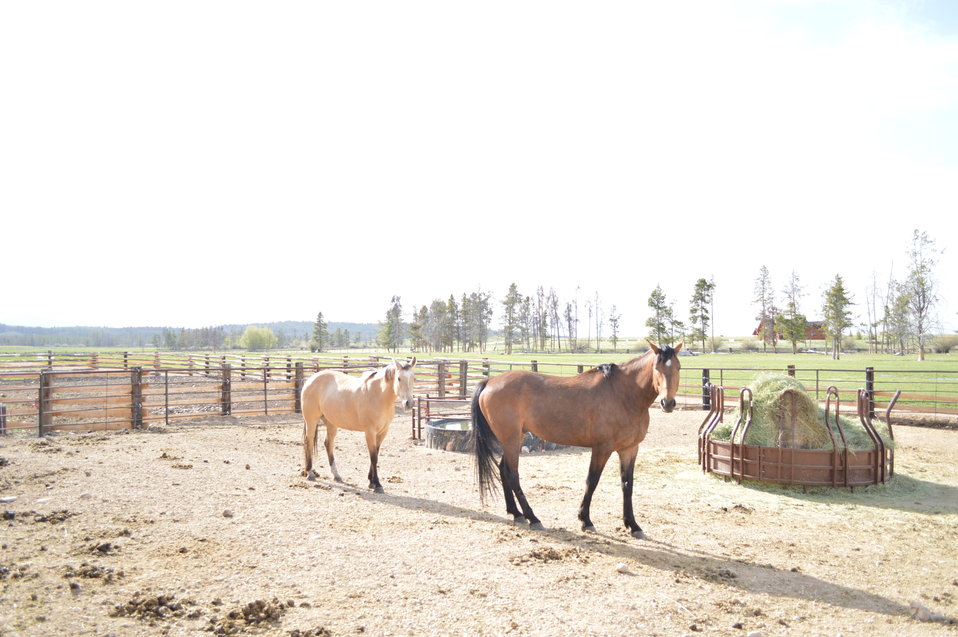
Regional Leadership Visit to Montana 2014